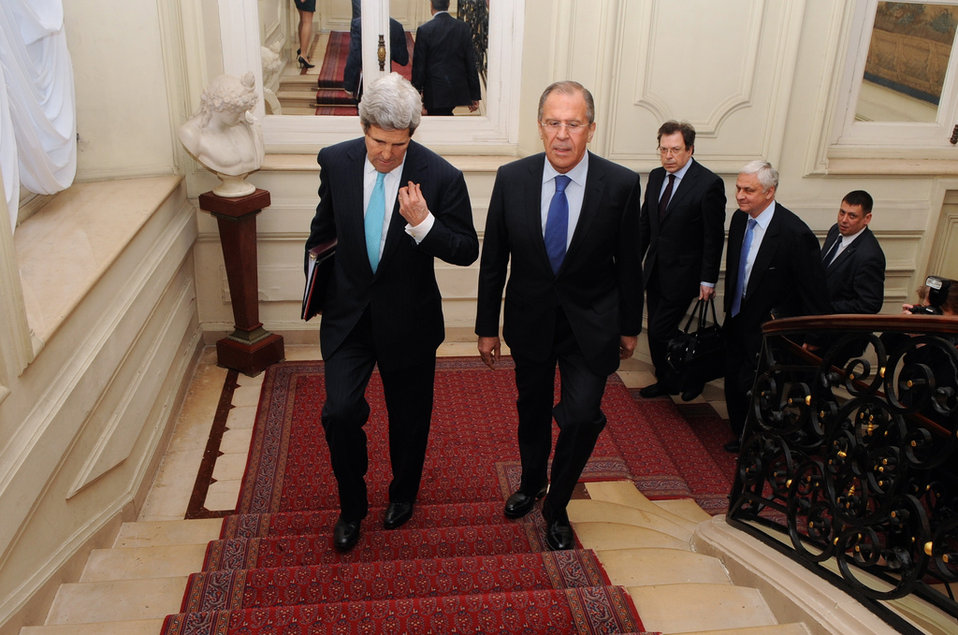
Secretary Kerry, Russian Foreign Minister Lavrov Walk to Ukraine Meeting in Paris

U.S. Secretary of State John Kerry and Russian Foreign Minister Sergey Lavrov climb the stairs in the Russian Ambassador's house in Paris, France, on March 30, 2014, before a meeting focused on Ukraine.